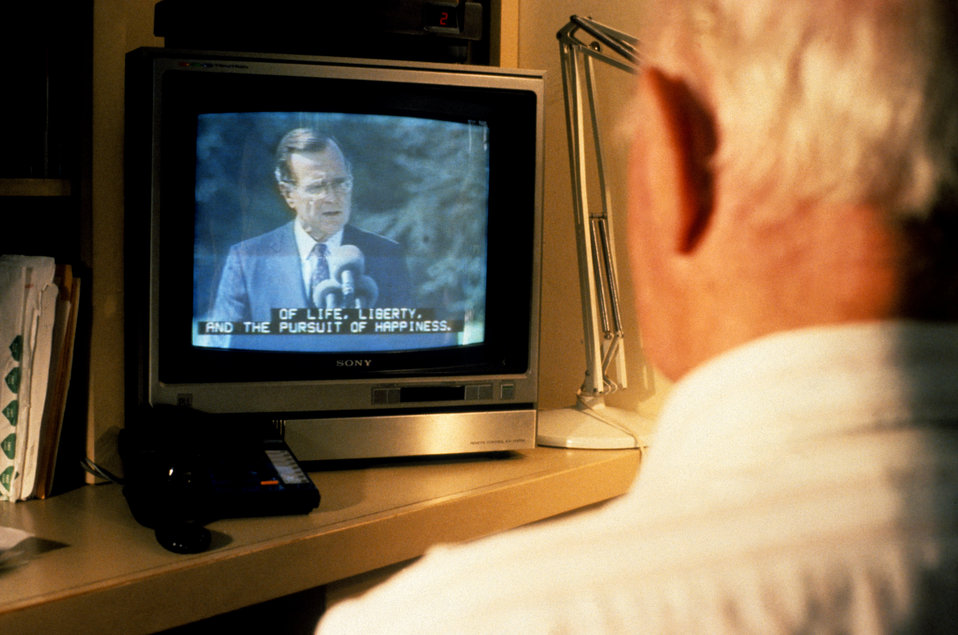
This 1995 image depicted an elderly man as he was watching a TV that had been configured to display text captioning, which could be viewed across the bottom of the screen. Implementation of text captioning used to be sporadic, and even then, could be used only with assistive technology. Currently, each new TV has the capacity to display captioning for programming that offers this service. Originally conceived to aid those with hearing impairments, it is now widely available to, and used by those with the circumstantial disabilities of being in loud ambient environments such as taverns, transportation facilities, etc.